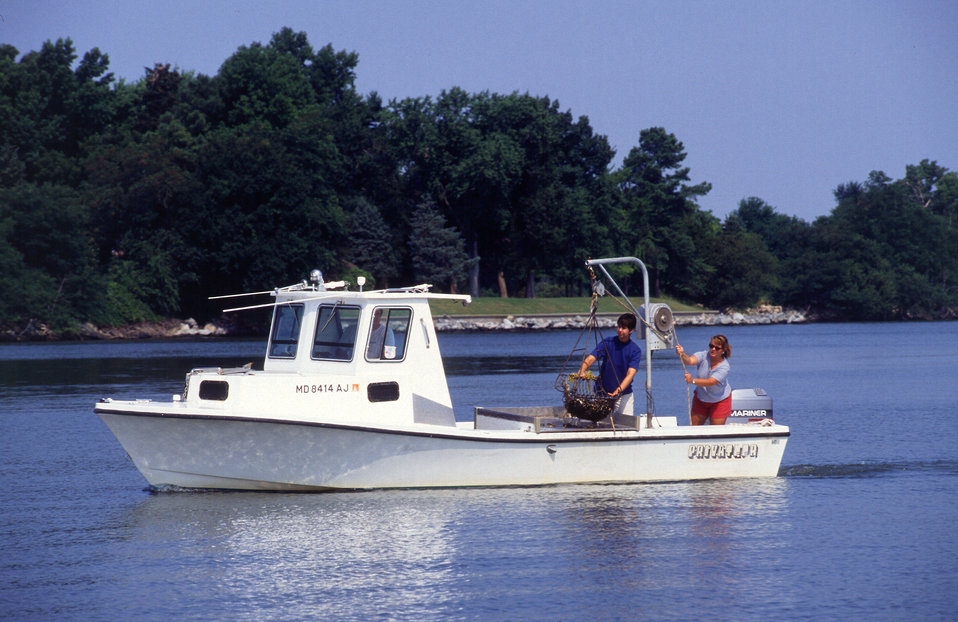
University of Maryland Horn Point Center for Environmental Studies research biologist Donald Merrit pilots a boat from which U.S. Department of Agriculture (USDA) Agricultural Research Service (ARS) chemists Laura McConnell and Jennifer Harman-Fetcho collect samples of oysters, water, and sediment from the Choptank River on Maryland's Eastern Shore.